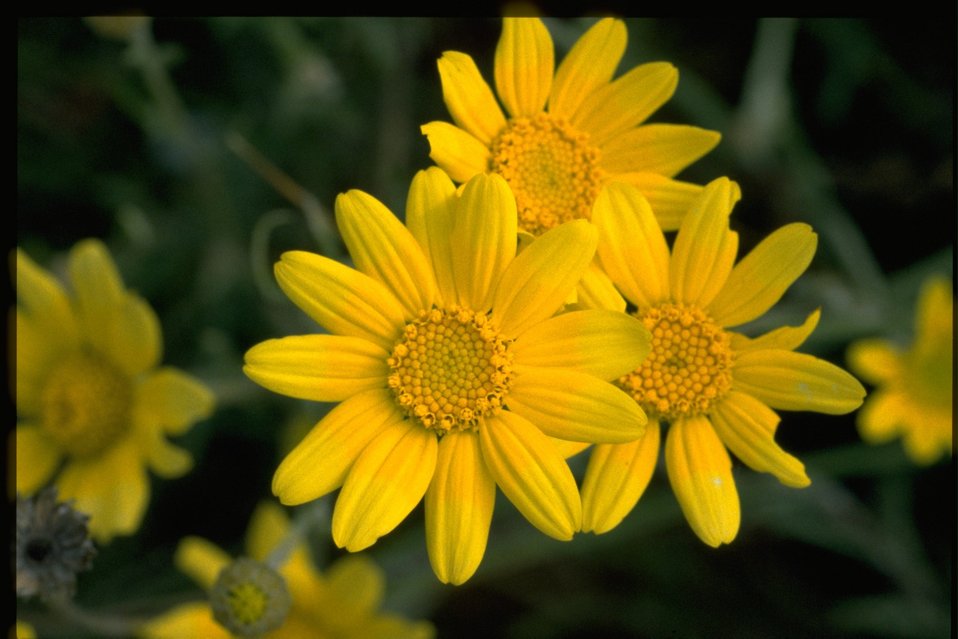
Closeup shot of Eriophyllum lanatum.